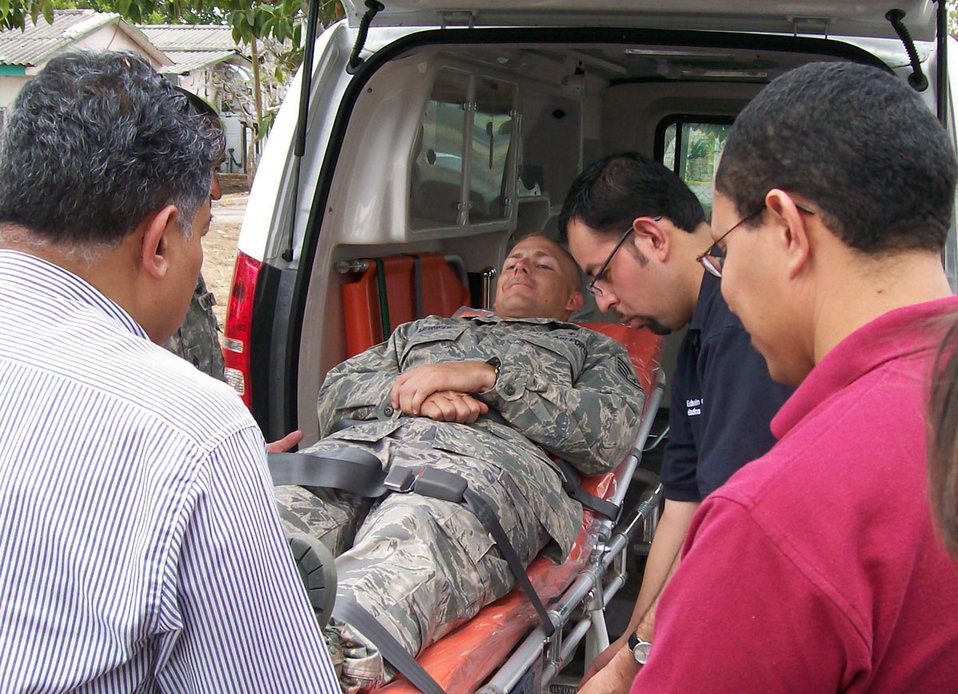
Honduras, American medics gather to share skills

Staff Sgt. Tom Murray is strapped to a gurney while Honduran emergency medics practice proper loading and unloading procedures in an ambulance April 6 at Hospital Militar Luis Alonso Discua in Honduras.Joint Task Force-Bravo members conducted an information exchange with Honduran medical professionals seeking an understanding of American emergency protocol that may assist the Hondurans with creating their own standardized emergency guidelines. Sergeant Murray is a Joint Task Force-Bravo medical technician.